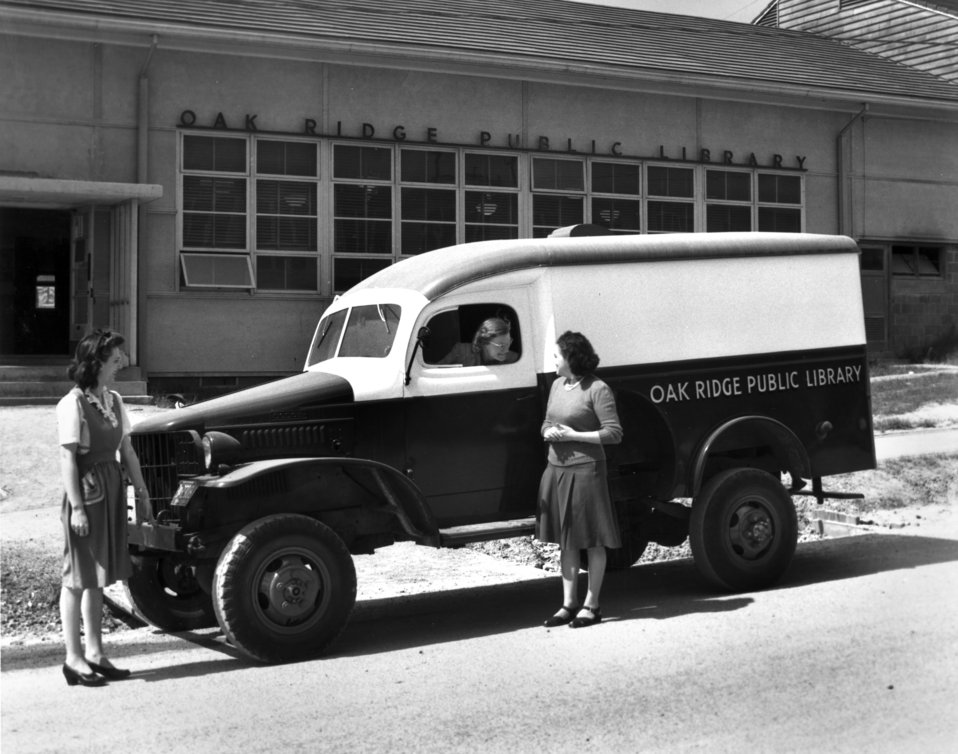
Library Truck Oak Ridge

PRO 395 DOE photo by Ed Westcott Oak Ridge Tennessee